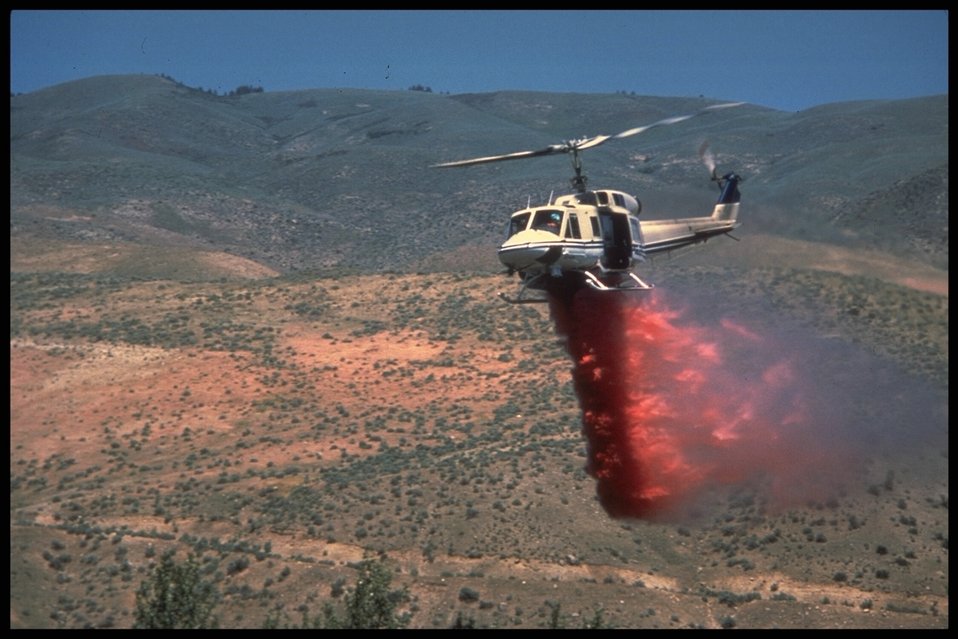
A helicopter helps fight a forest fire.